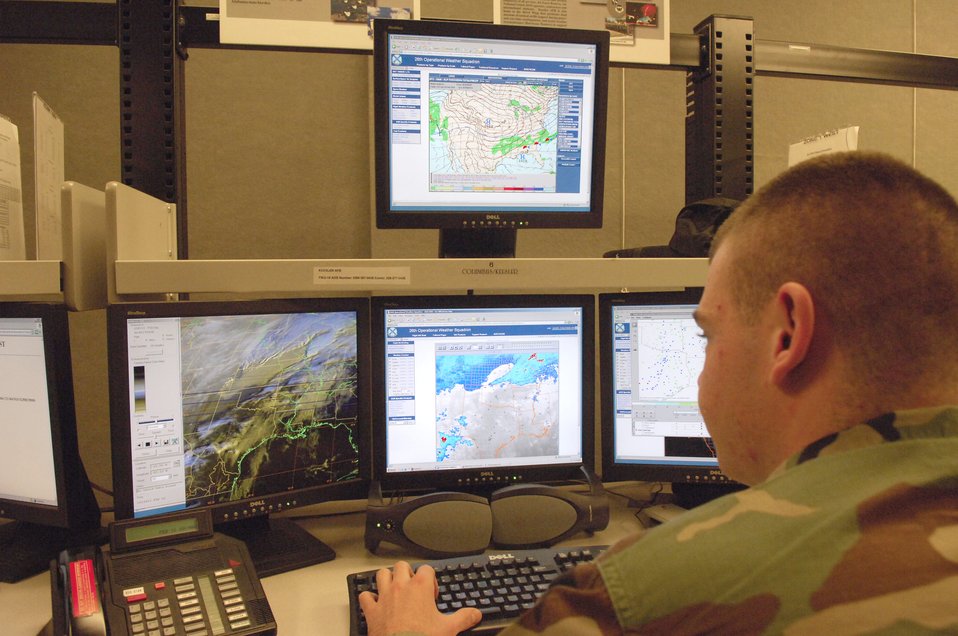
Weather squadron keeps eyes on the sky

Airman Eric Reichwaldt observes weather data to help predict situations that might affect the Air Force mission. Computers show information about weather patterns for a more accurate weather forecast. He is a regional forecaster apprentice with the 26th Operational Weather Squadron.